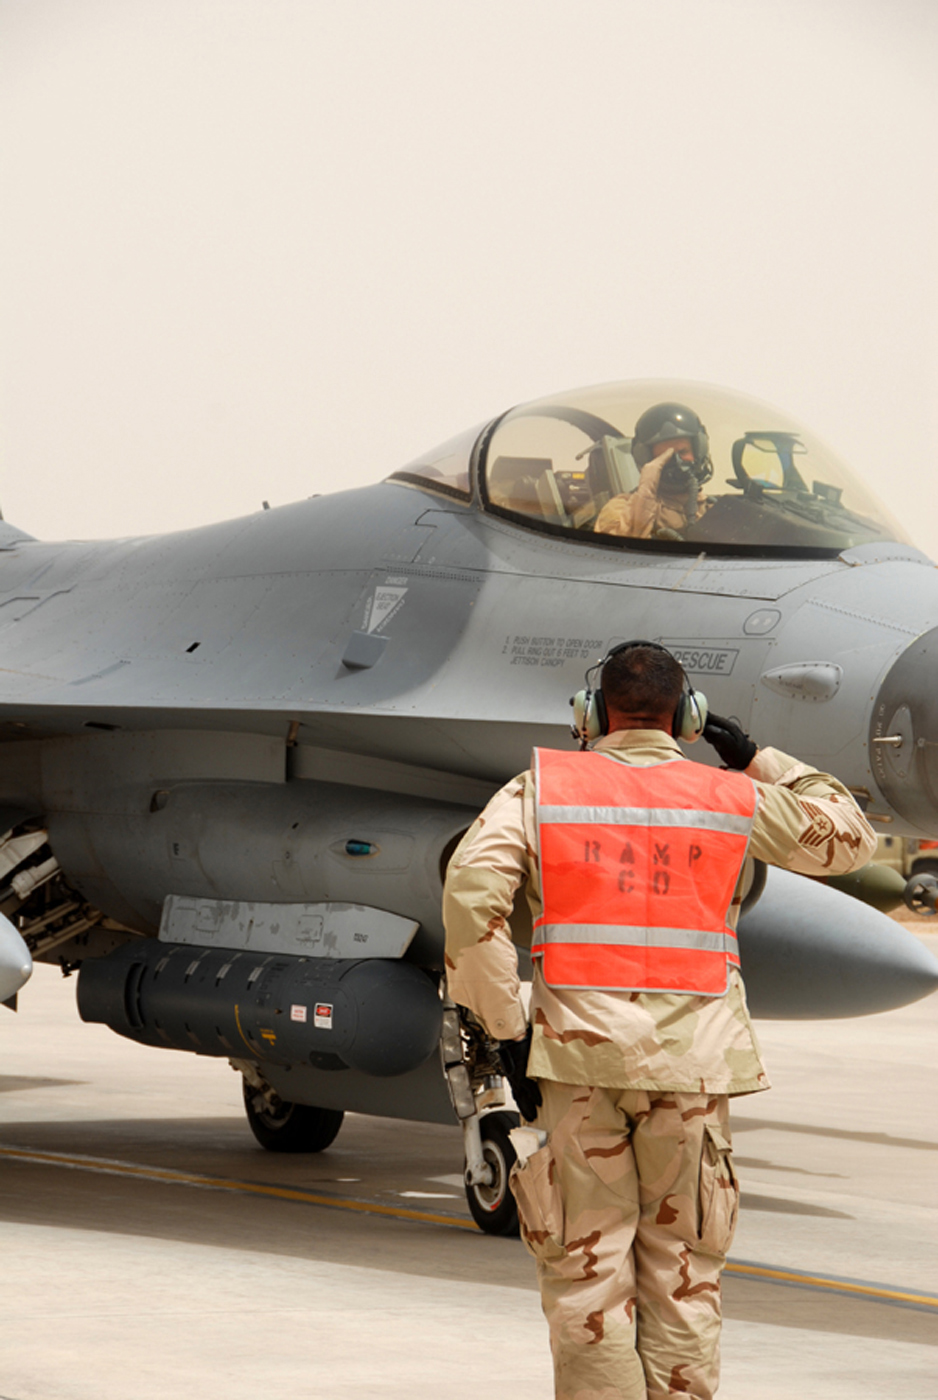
July 28 airpower summary: F-16s fly close-air-support missions

An F-16 Fighting Falcon crew chief salutes the pilot before a close-air-support mission at Balad Air Base, Iraq. F-16s flew CAS sorties exclusively for Operation Iraqi Freedom and provided multiple shows of force over Iraq July 28.